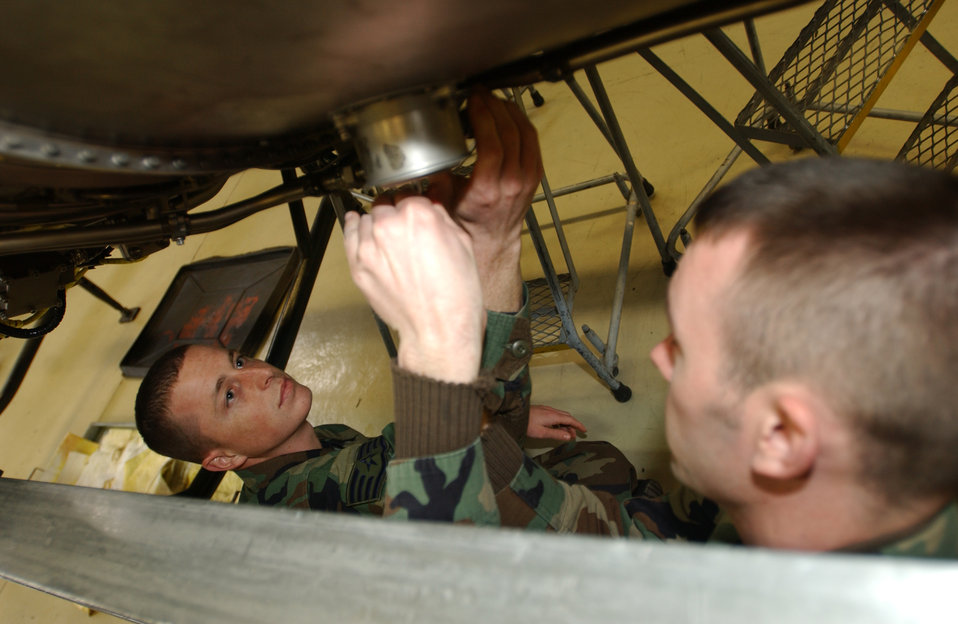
Falcon readiness

SPANGDAHLEM AIR BASE, Germany -- Staff Sgts. Daniel Souza (left) and Brian Donovan train on the removal and installation of an F-110 flame sensor on an F-16 Fighting Falcon engine here April 13. Sergeants Souza and Donovan are both avionics students with the 372nd Training Squadron.